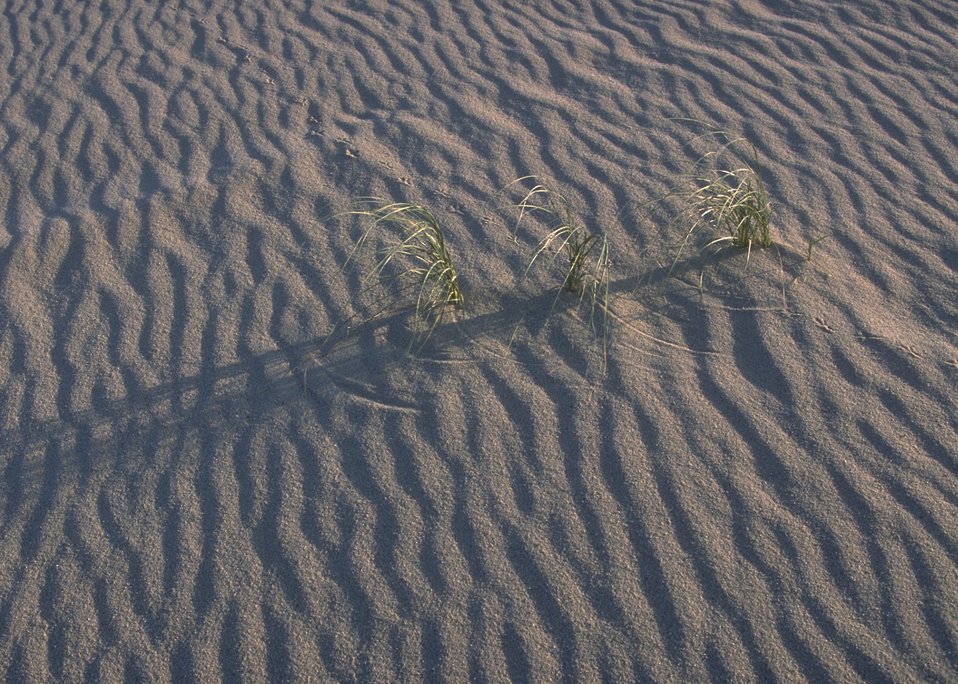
Sand dunes along the Alcova/Seminoe Back Country Byway, Rawlins Field Office.